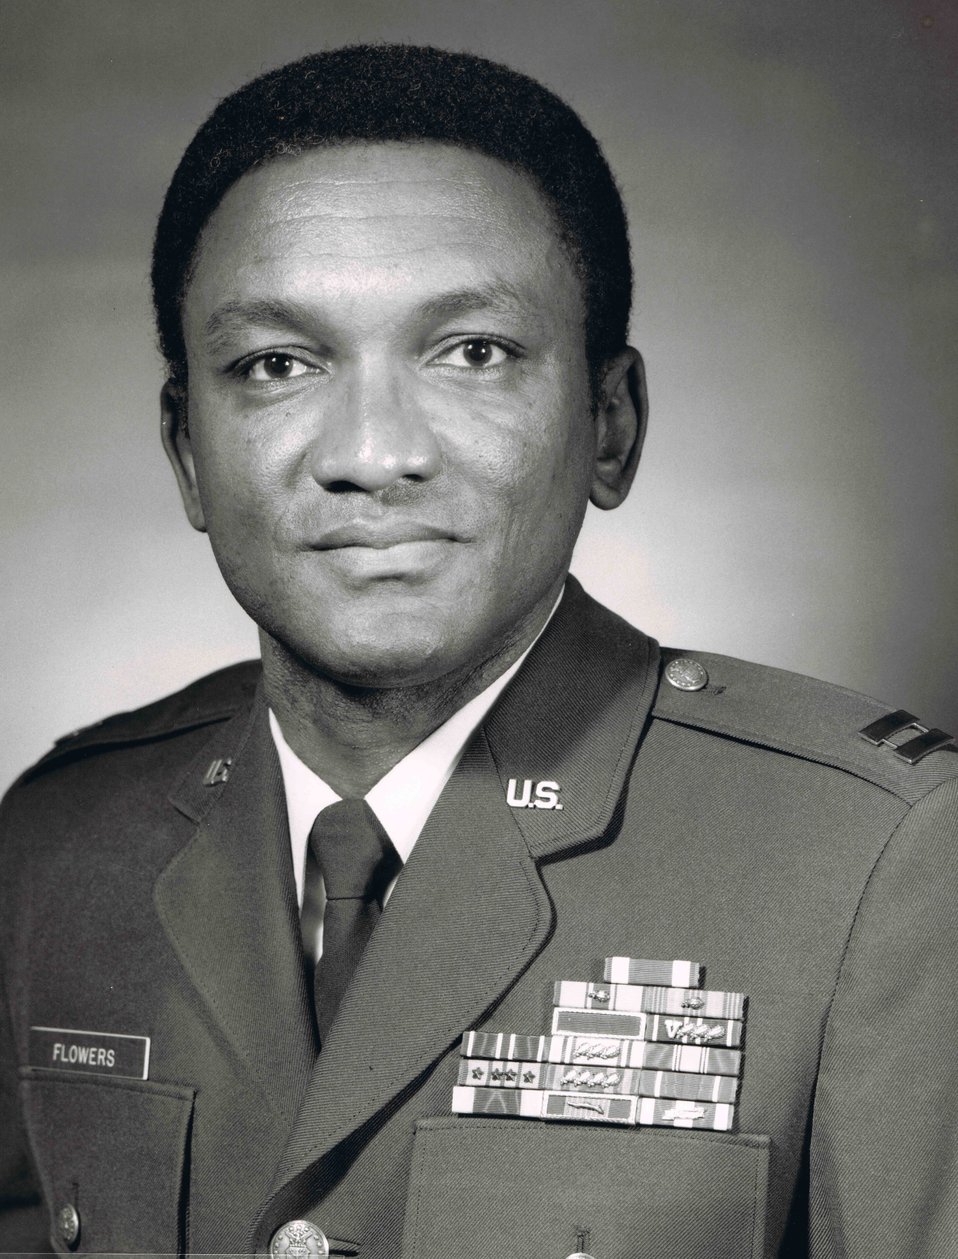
Gen. Alfred Flowers

Then-Capt. Alfred Flowers at the Pentagon in November 1985.